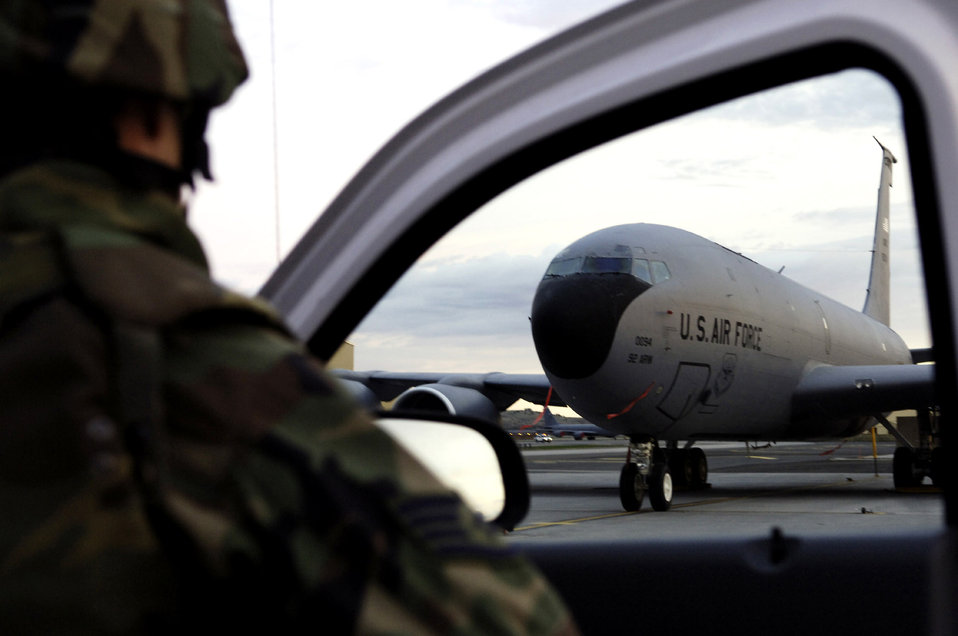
Fairchild puts readiness to the test

A member of the 92nd Security Forces Squadron takes cover and provides over-watch while participating in a simulated aircraft hijacking during an exercise April 18 at Fairchild Air Force Base, Wash. Tech. Sgt. Joel Jones and Tech. Sgt. Cliff Spry, both of the 92nd Maintenance Group, disguised themselves as terrorists and attempted to infiltrate the flightline, taking one maintenance Airman hostage before being apprehended by security forces.